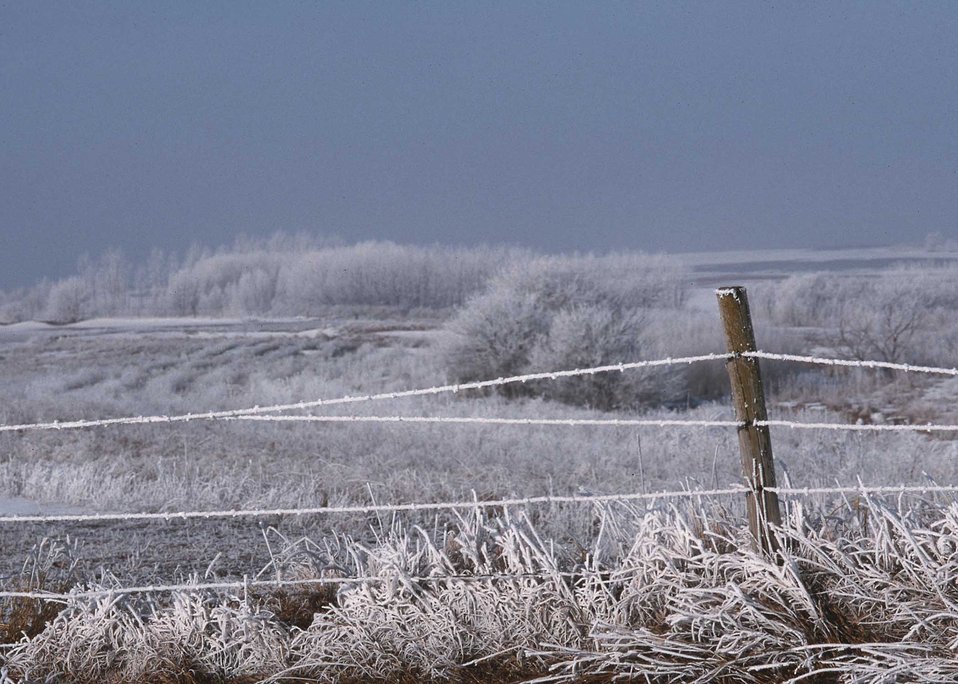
A heavy frost and freeze make a striking scene along a buffer in central Iowa.